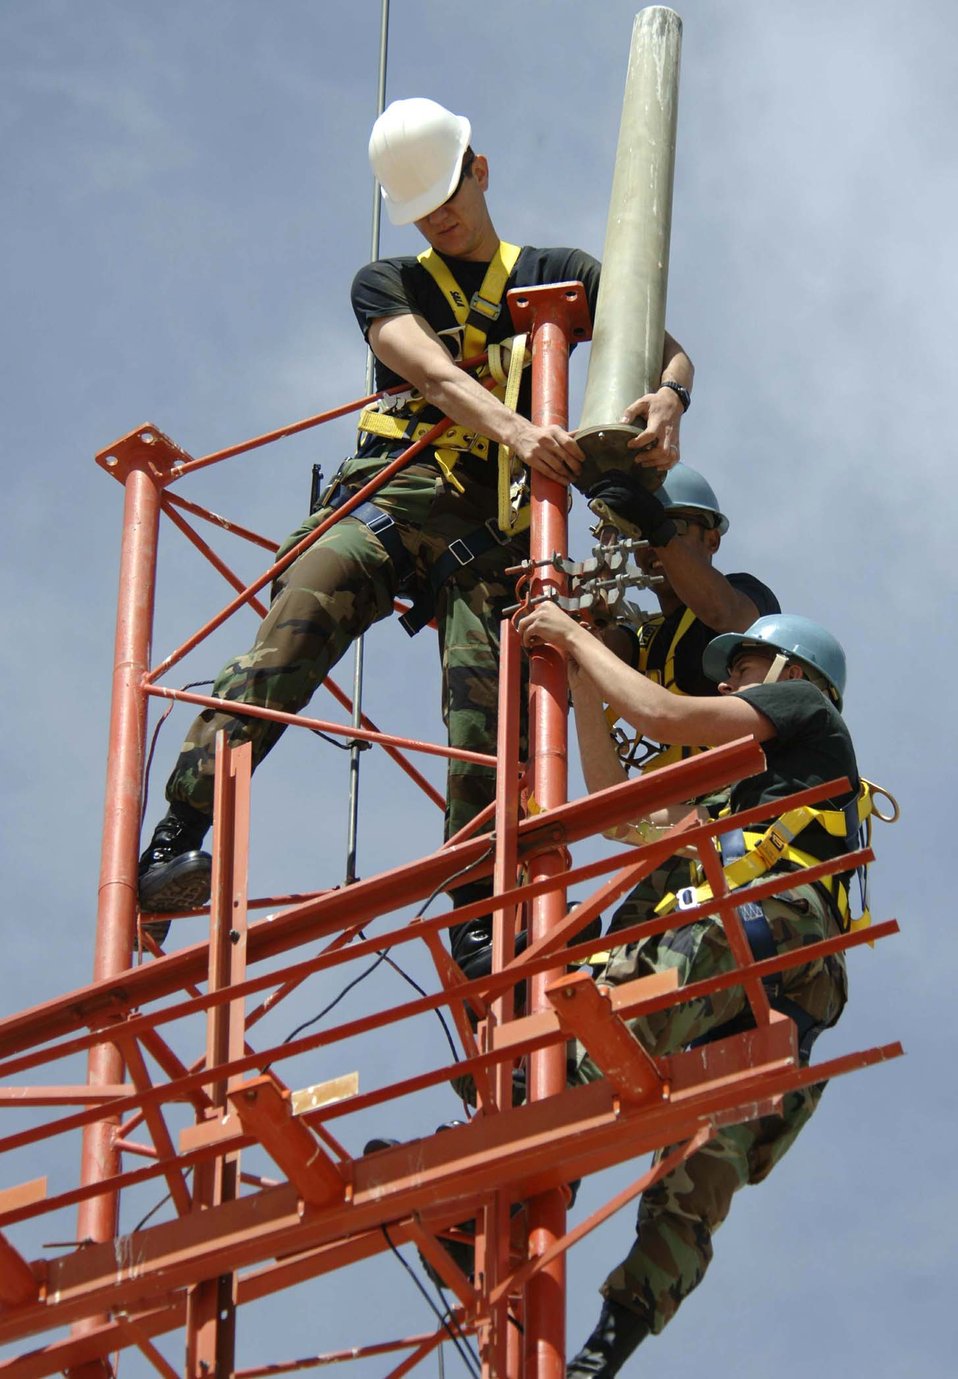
Tower maintenance

Airmen mount an AS-1181 antenna to the Glideslope antenna tower Wednesday, March 29, 2006, at Davis-Monthan Air Force Base, Ariz. The antenna was remounted to comply with lightning protection standards. It connects a very high frequency radio with the flight check office, which verifies calibration and alignment of airfield navigational equipment. The Airmen are airfield systems journeymen with the 355th Communications Squadron.